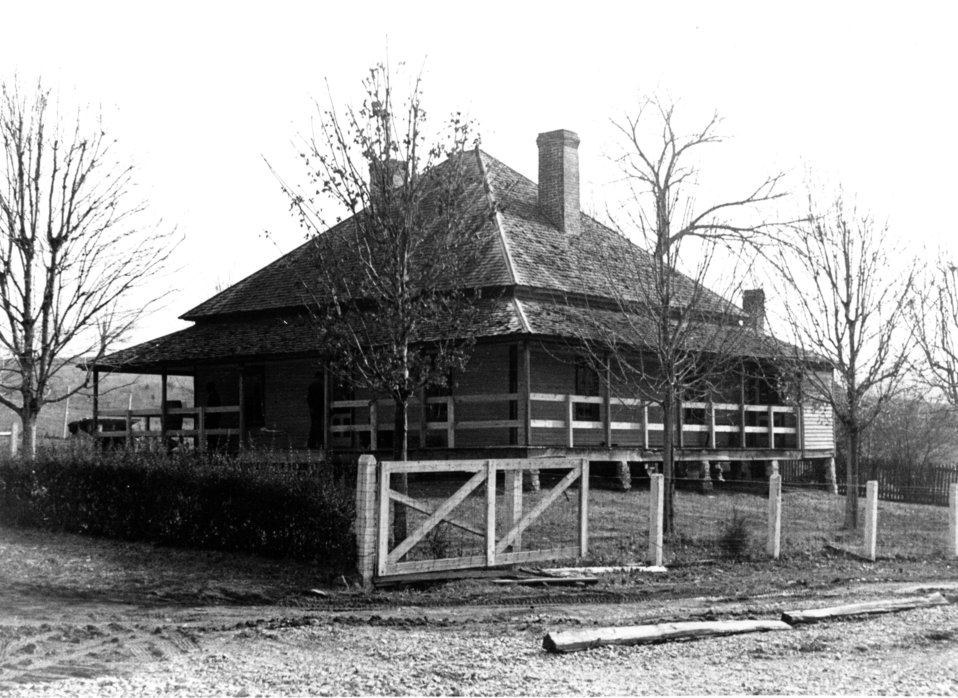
Early settlers at Oak Ridge